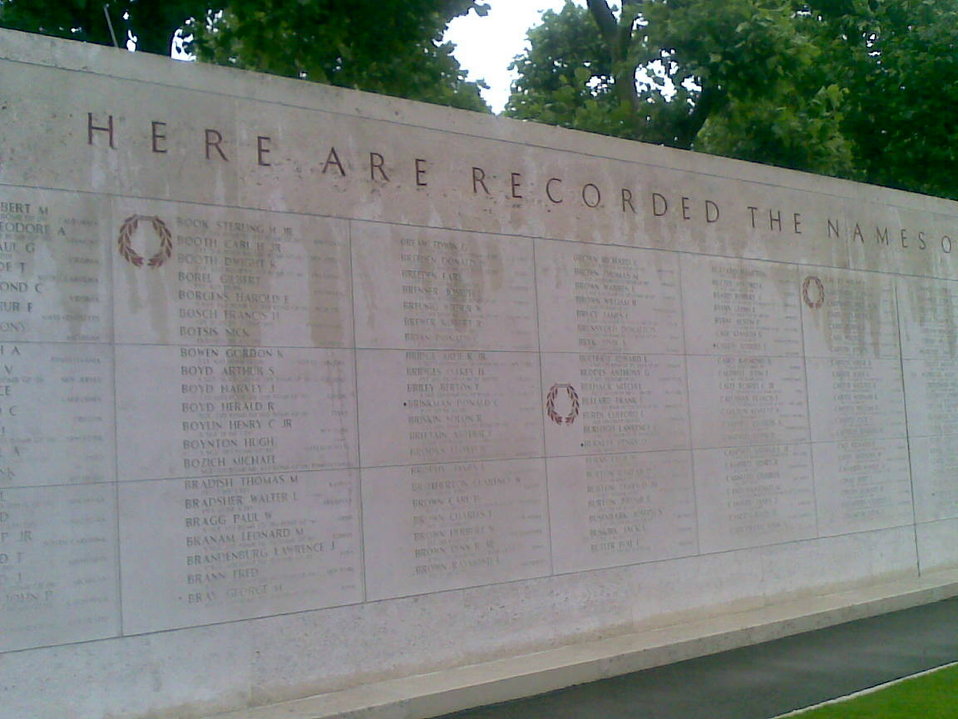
Deutsch: Netherlands American Cemetery, Ehrenhof